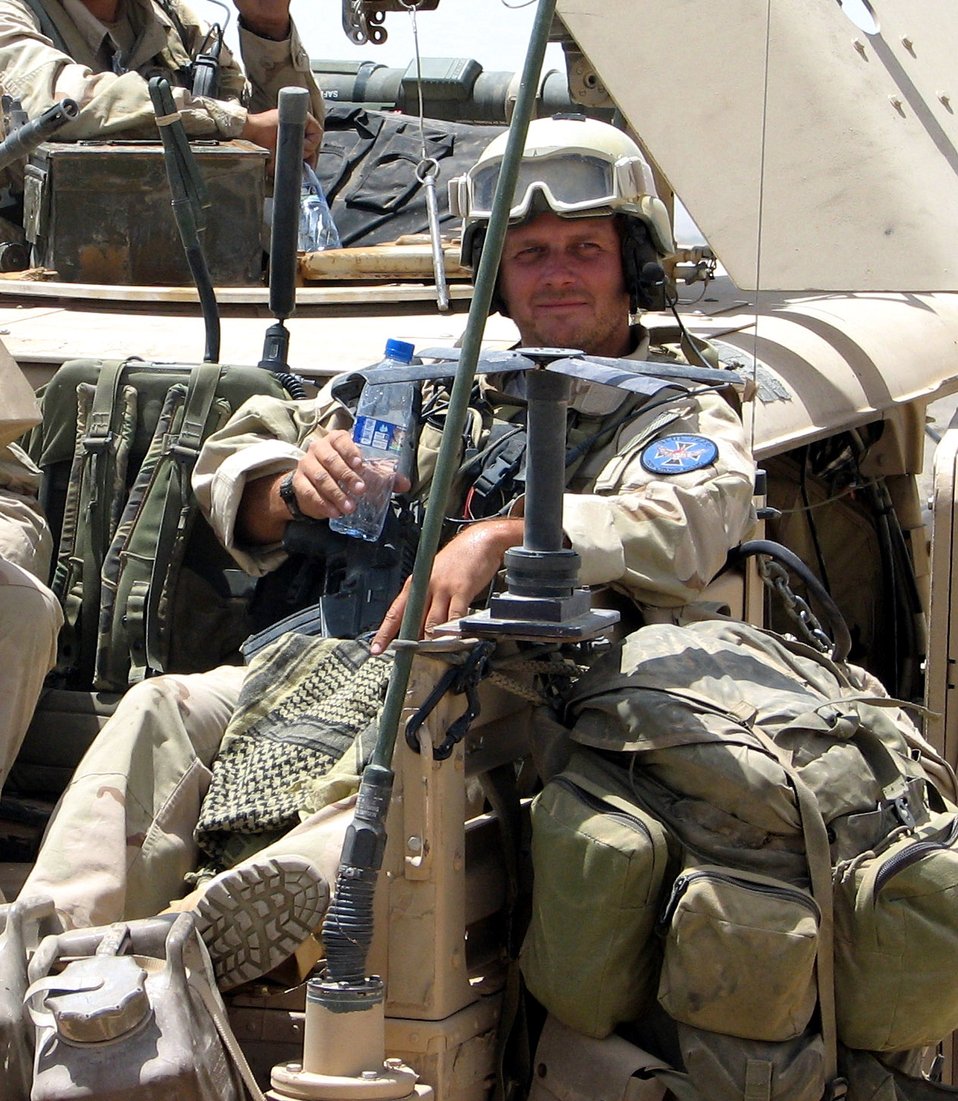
McChord combat controllers receive medals

Tech. Sgt. Scott Innis is pictured during his 2006 deployment to Afghanistan. During this deployment, Sergeant Innis served as a joint terminal air controller attached to an Army special forces team. He is a combat controller with the 22nd Special Tactics Squadron at McChord Air Force Base, Wash. One day, his team's forward-operating base came under heavy enemy fire. Sergeant Innis risked his life by climbing up a small, wooden observation tower in the middle of the base in order to direct close-air support against the enemy. Despite making himself a magnet for bullets and rocket-propelled grenades, the combat controller stayed in the tower for 24 hours directing fire, resulting in the elimination of more than 100 enemy fighters. Sergeant Innis was presented a Silver Star Dec. 18 for his actions that day in Afghanistan.